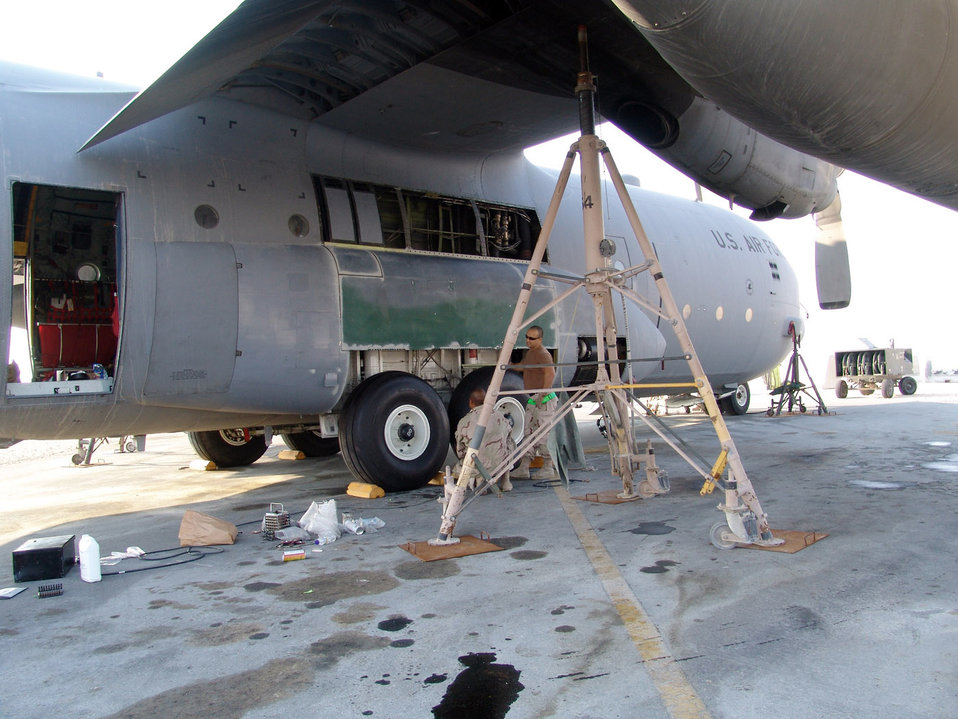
Structural repair

SOUTHWEST ASIA (AFPN) -- Structural repair technicians remove all the damaged parts from a C-130 Hercules before deciding what needs to be replaced. The technicians are with the 379th Expeditionary Maintenance Squadron.